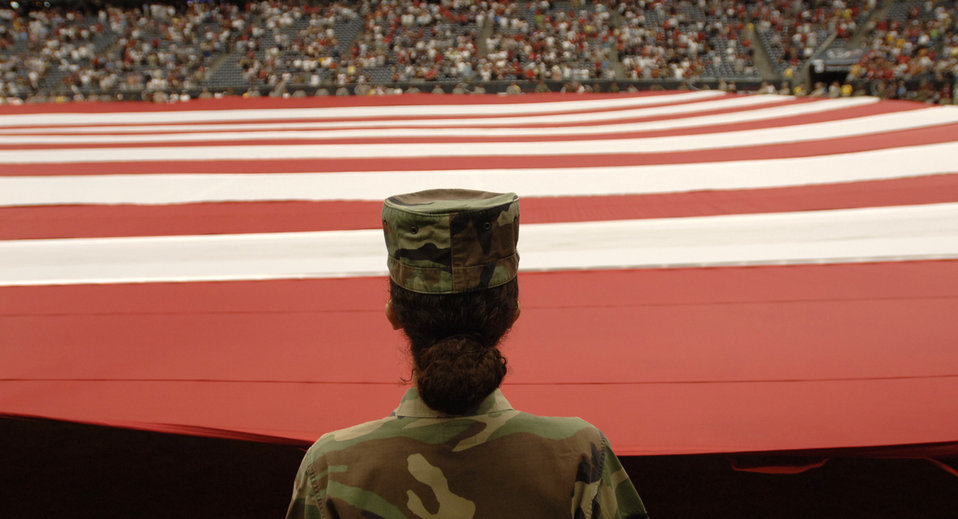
Servicemembers shine during NFL game

An Air Force member along with 199 other servicemembers pull out a football-field size flag during pregame events of the football game between the Houston Texans and Washington Redskins at Reliant Stadium in Houston Sept. 24. The game was designated as the Houston Texans' Salute to the Military day by team officials.